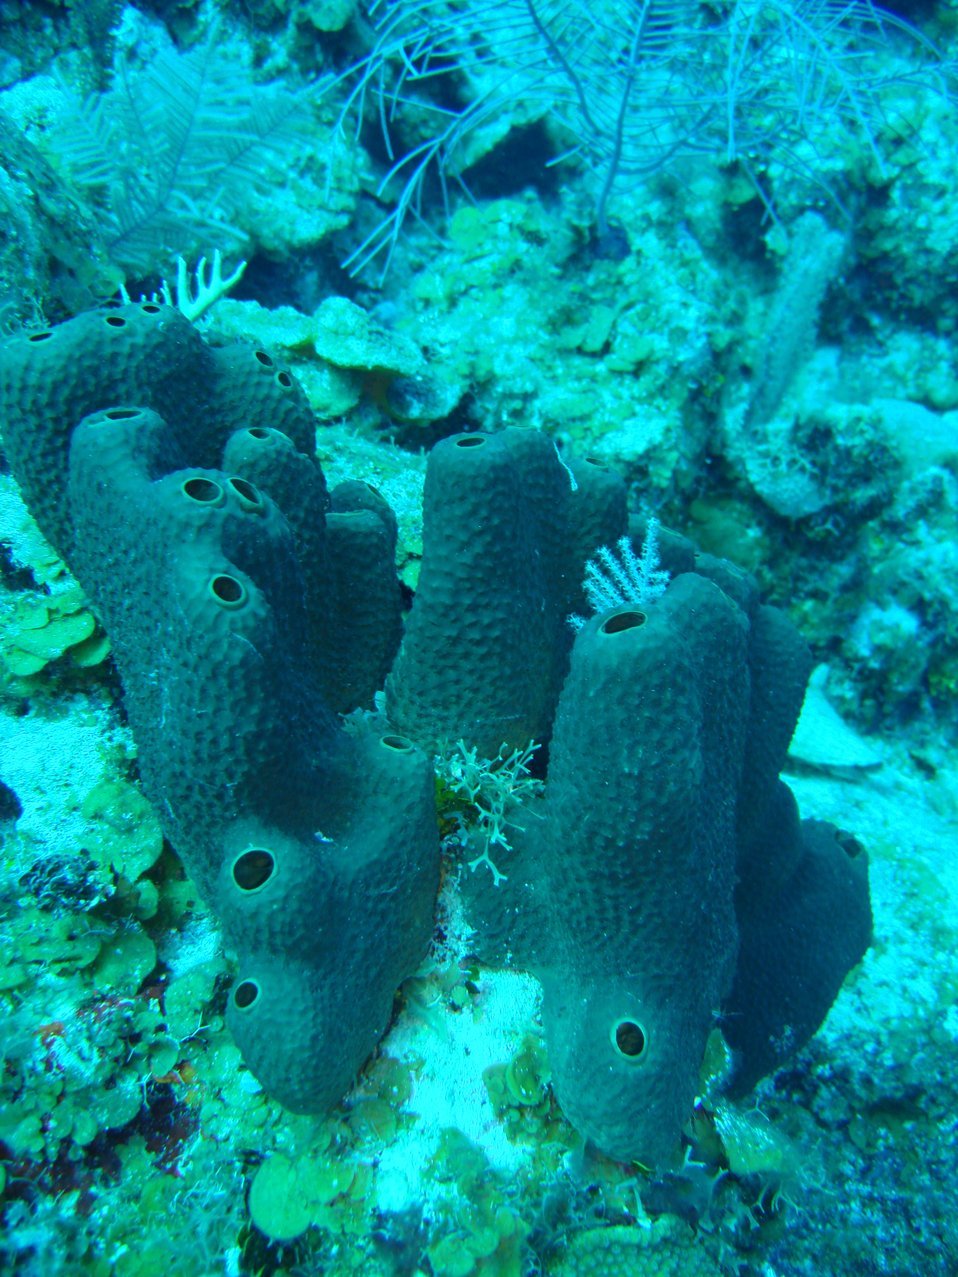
Sponge (Smenospongia aurea)